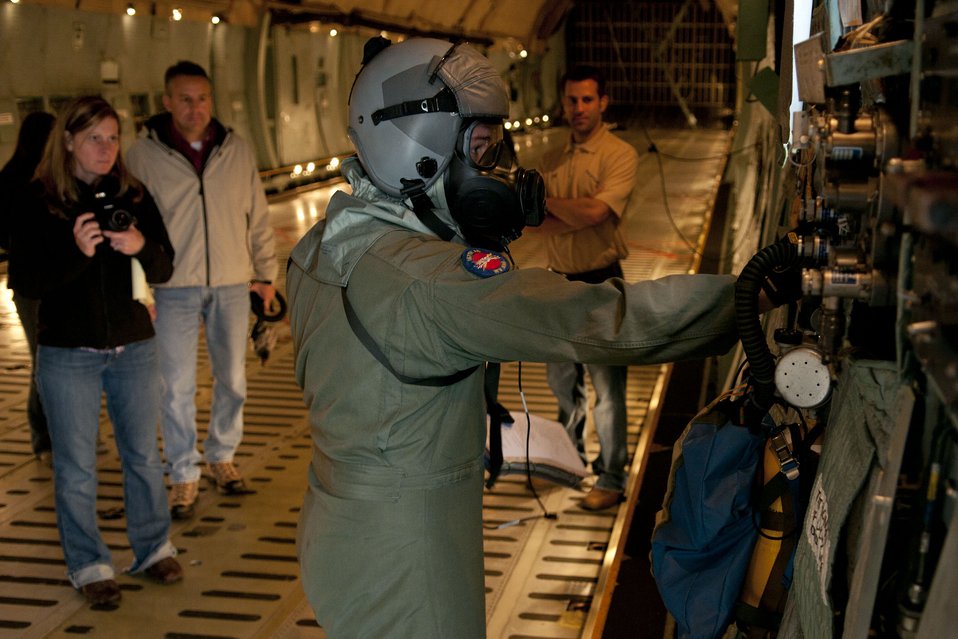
167th AW provides testing ground for mask development

Tech. Sgt. Michael Lindamood, a loadmaster for the 167th Airlift Squadron, performs a preflight inspection while wearing a joint service aircrew mask as a research team for the JSAM observes at the West Virginia Air National Guard in Martinsburg, W.Va., Dec. 7, 2011. A Department of Defense research team working on the development of a joint service aircrew mask conducted field assessments at the 167th Airlift Wing.